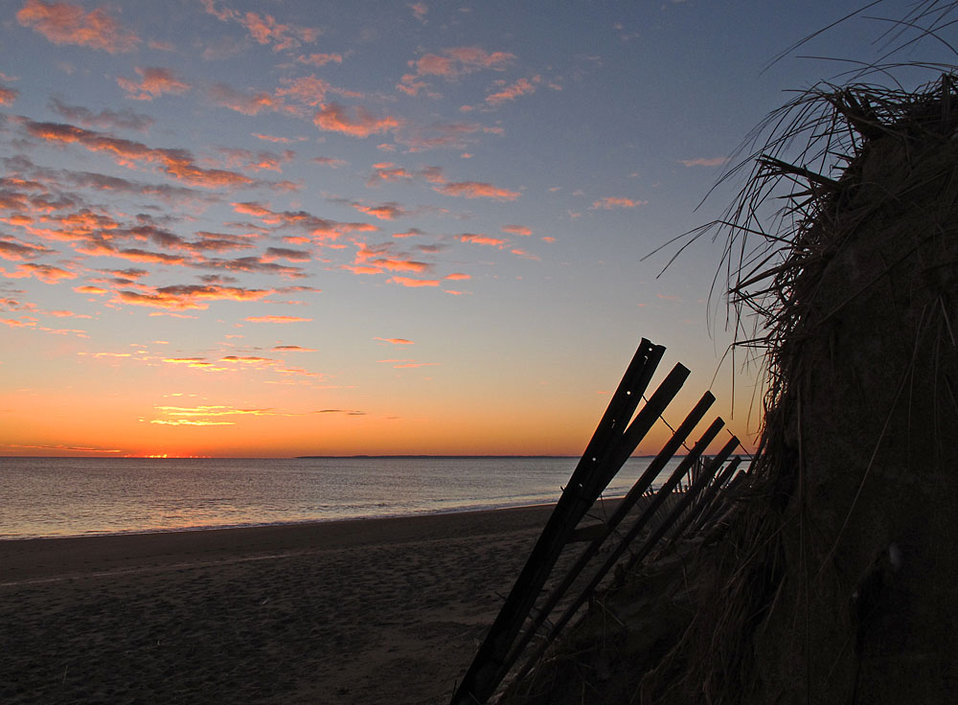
Sunrise and snow fence

Sunrise over Parker River National Wildlife Refuge in Newburyport, Massachusetts.